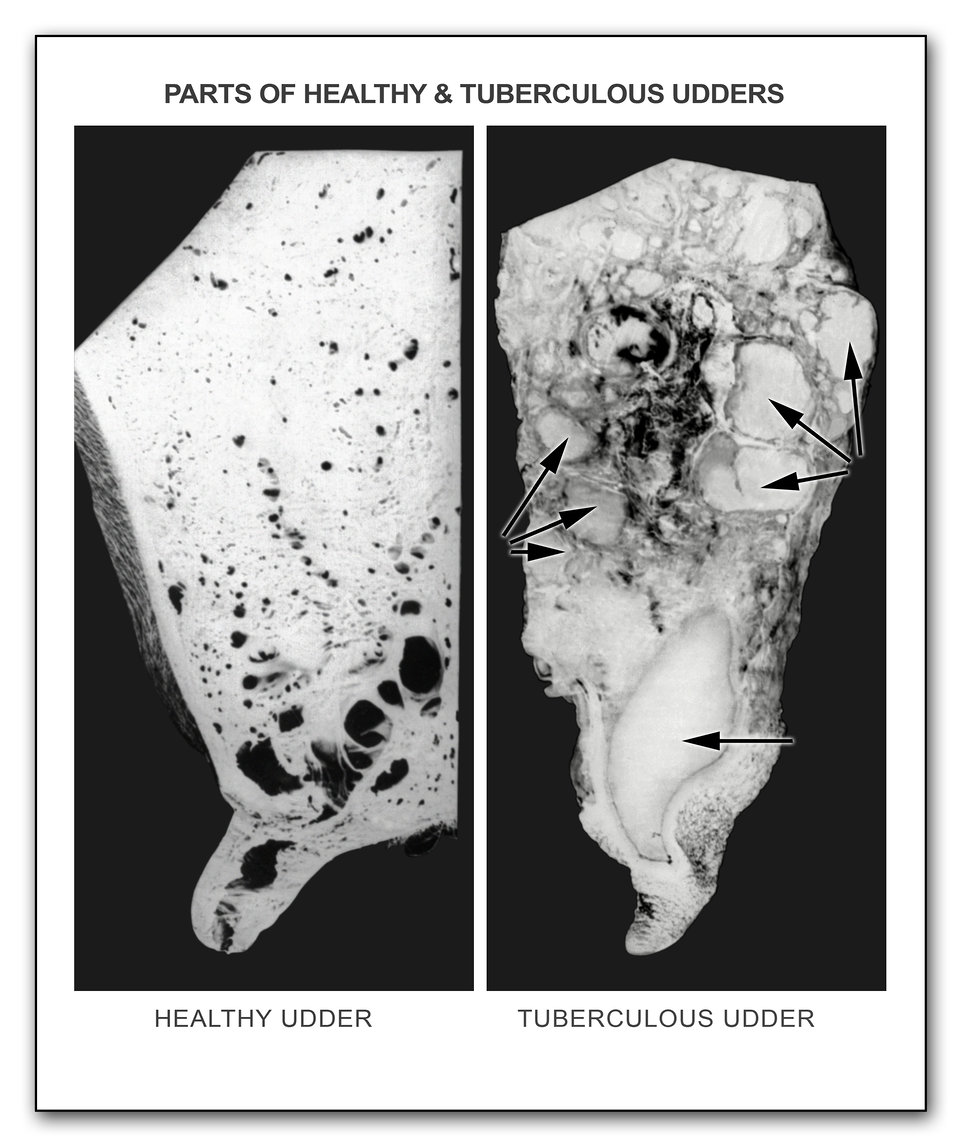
These two 1929 photographs depicted a comparison between a healthy bovine udder on the left, and a tuberculous cow's udder on the right. The photograph was used as an aid to livestock owners and health inspectors, in order to help them to recognize the condition of 'bovine tuberculosis', which could contribute to the bacterial contamination of raw, unpasteurized milk.